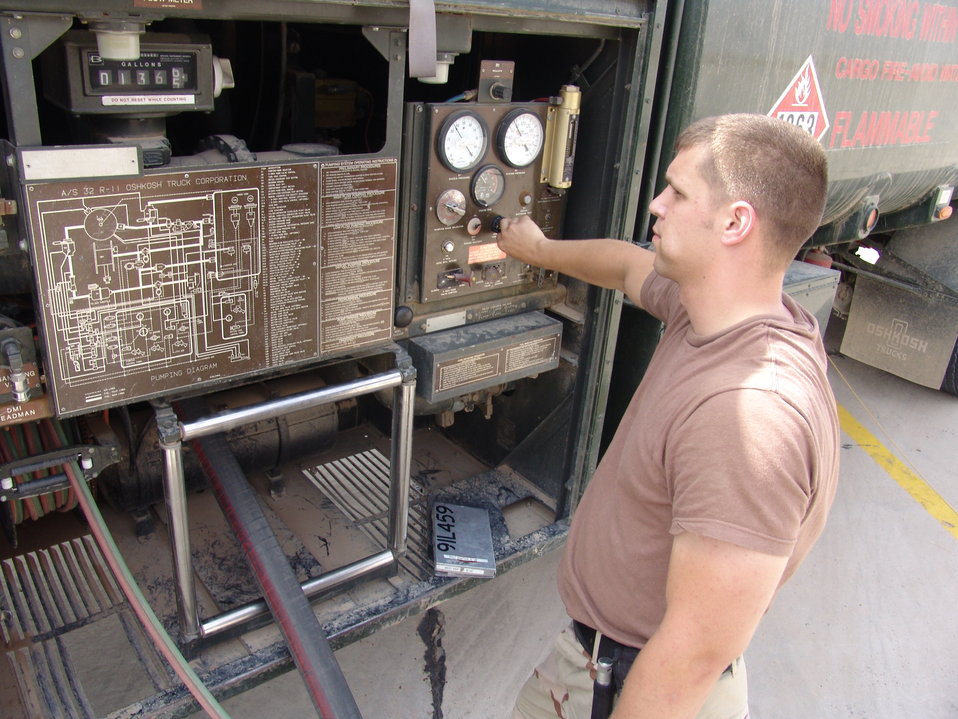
Mission time

BAGHDAD, Iraq -- Senior Airman Matthew Spatz pumps fuel to a C-130 Hercules after a tactical airlift mission here. He is a fuels specialist with the 447th Expeditionary Logistics Readiness Squadron here.